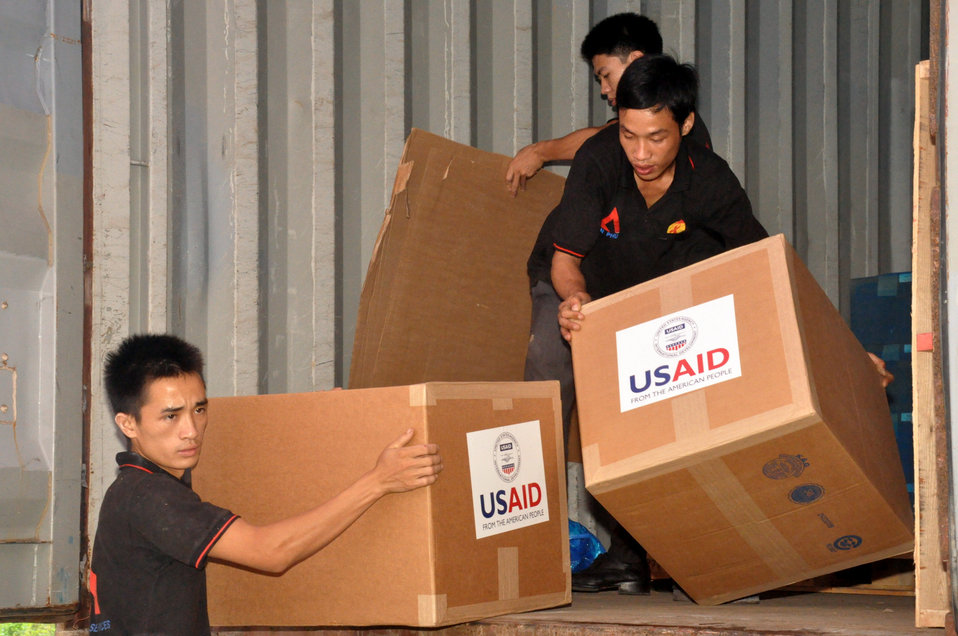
U.S. Provides Protective Gear to Help Prevent Disease Outbreaks